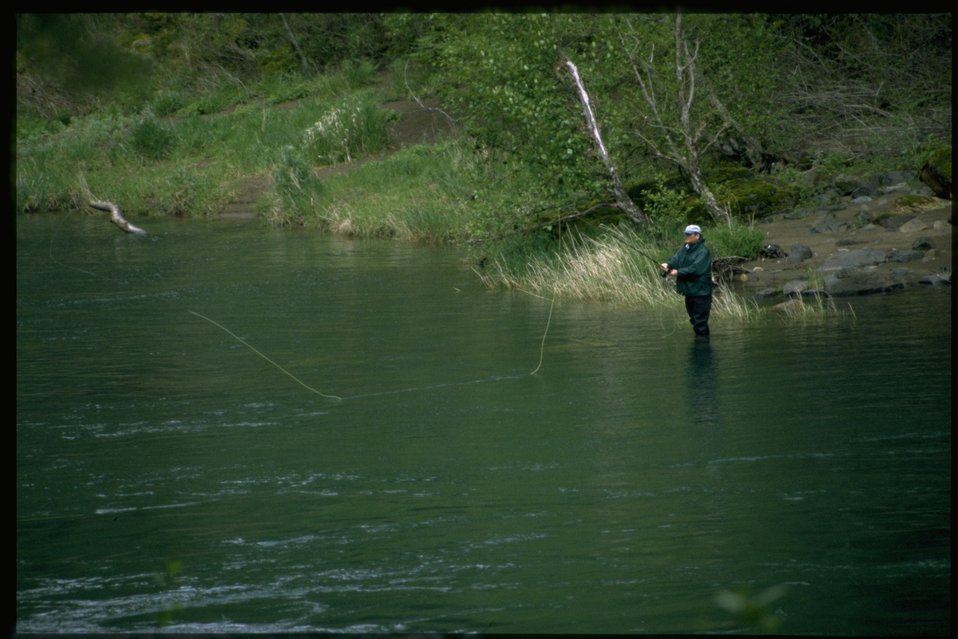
Man fishing in Swiftwater stream.